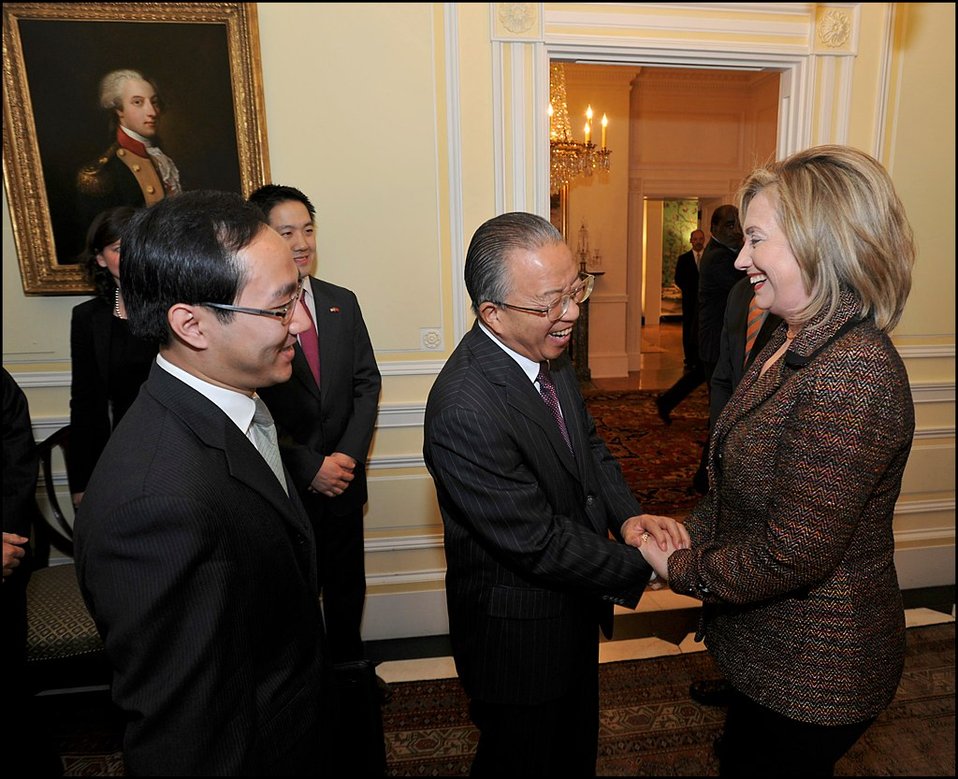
U.S.-China Strategic and Economic Dialogue

Secretary of State Hillary Clinton greets her counterpart in the U.S.-China Strategic and Economic Dialogue, Chinese State Councilor Dai Bingguo before a working dinner at the Blair House.